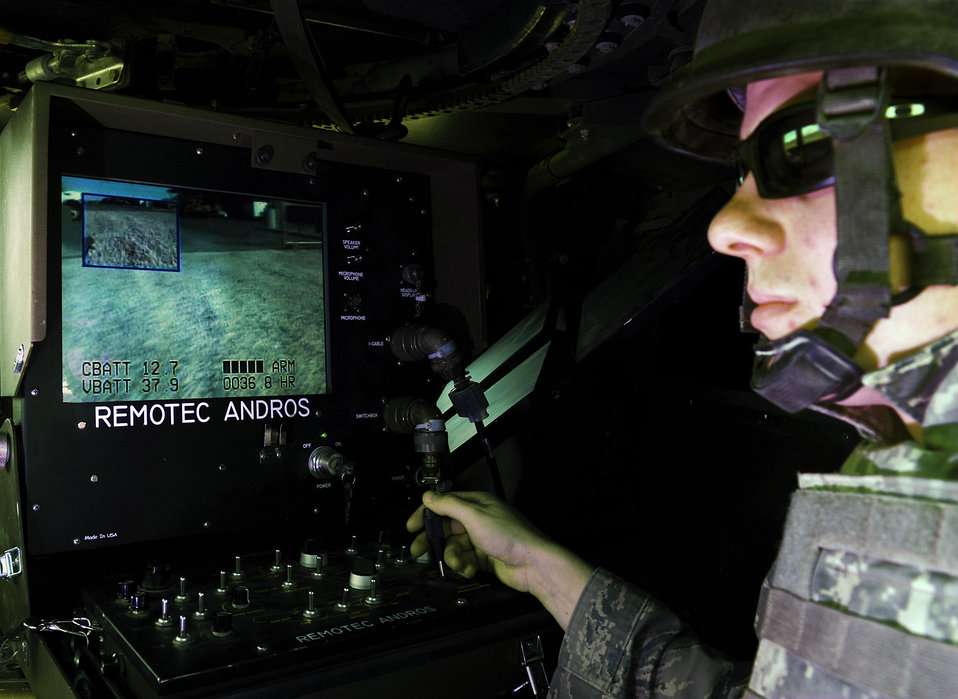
Move to the left and stop

Airman 1st Class Lyle Flagg uses a remote robot with a mounted camera to remove an improvised explosive device from the safety of a Humvee April 9 at Nellis Air Force Base, Nev. Airman Flagg is assigned to explosive ordnance disposal with the 99th Civil Engineer Squadron.